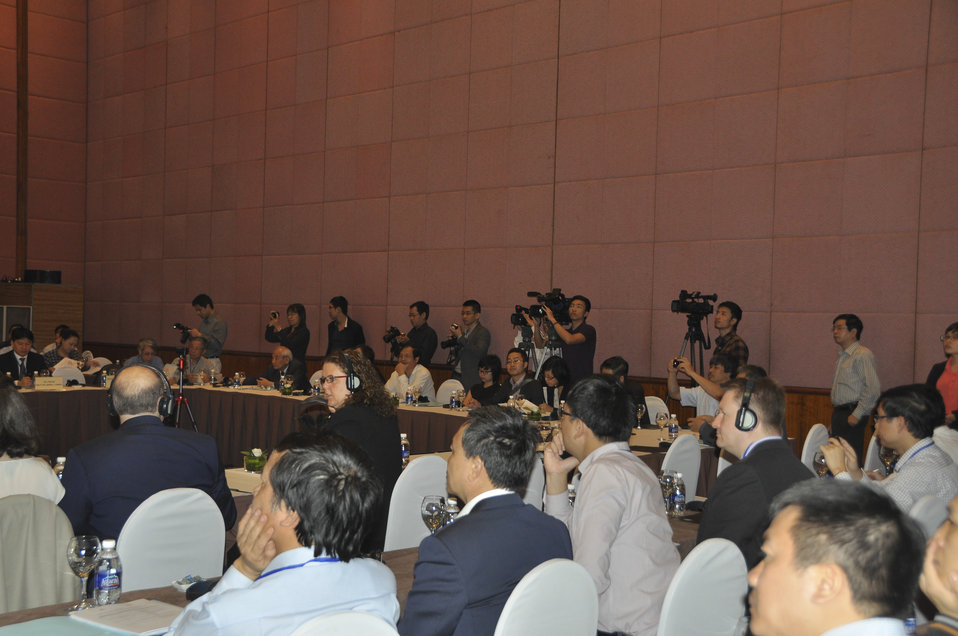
Launching of USAID Vietnam Clean Energy Program.

Hanoi, May 6, 2014.